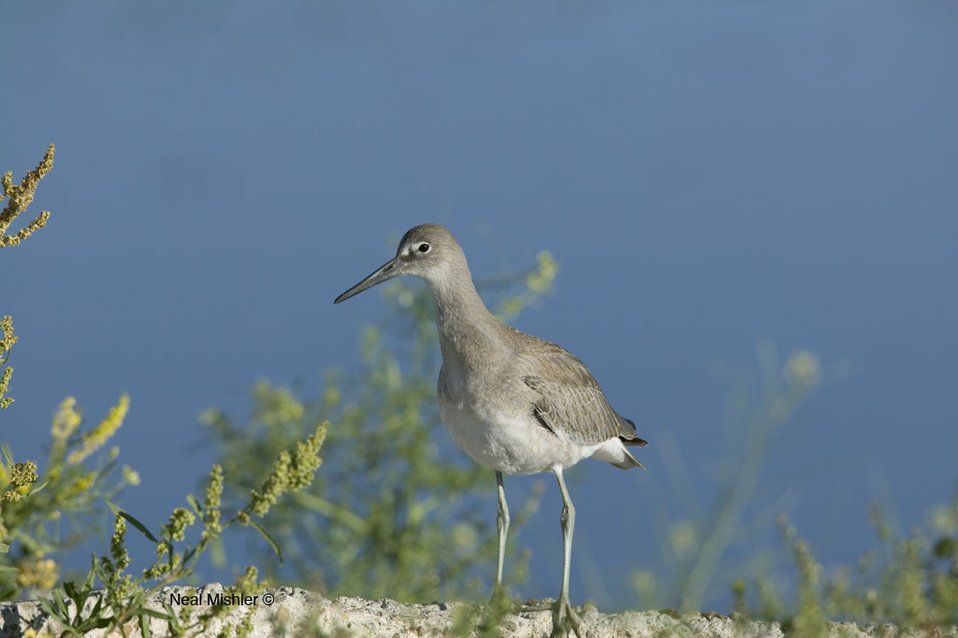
Willet Standing on the Shore of the Marsh

The lands of the refuge were established to protect and provide habitat for migratory birds that cross State lines and international borders and are by law a Federal trust responsibility.

The refuge is of great value to waterfowl and shorebirds, as well as other migrating water-dependent bird species, because of the diversity of wetland and upland habitats that provide for the diverse life cycle needs of these species.